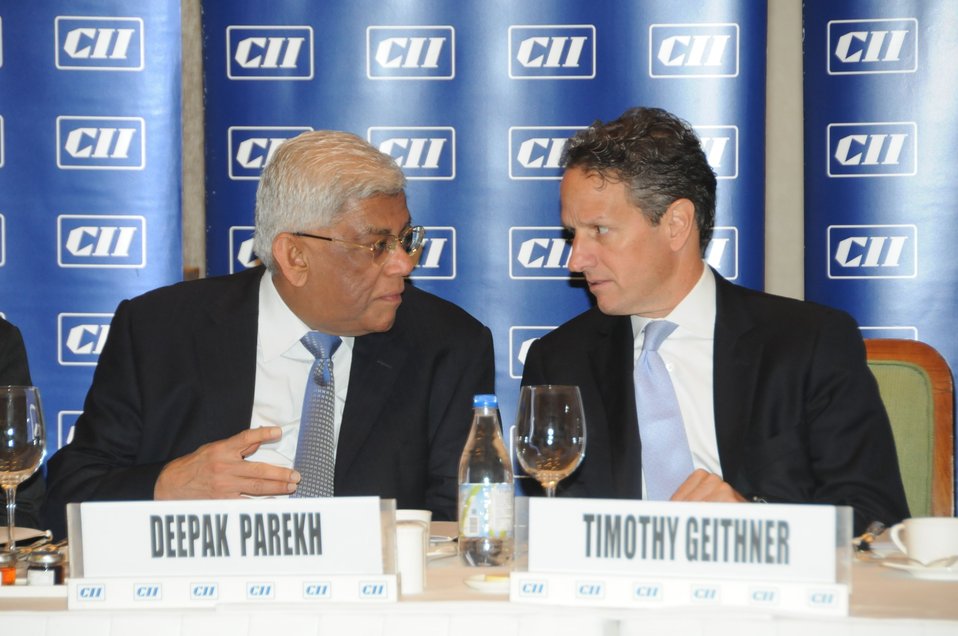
Secretary Geithner meets with India's business leaders

Secretary Geithner met with leaders of India’s major multinational corporations in a meeting organized by the Confederation of Indian Industry. Pictured here with Deepak Parekh, Chairman of the Housing Development Finance Corporation